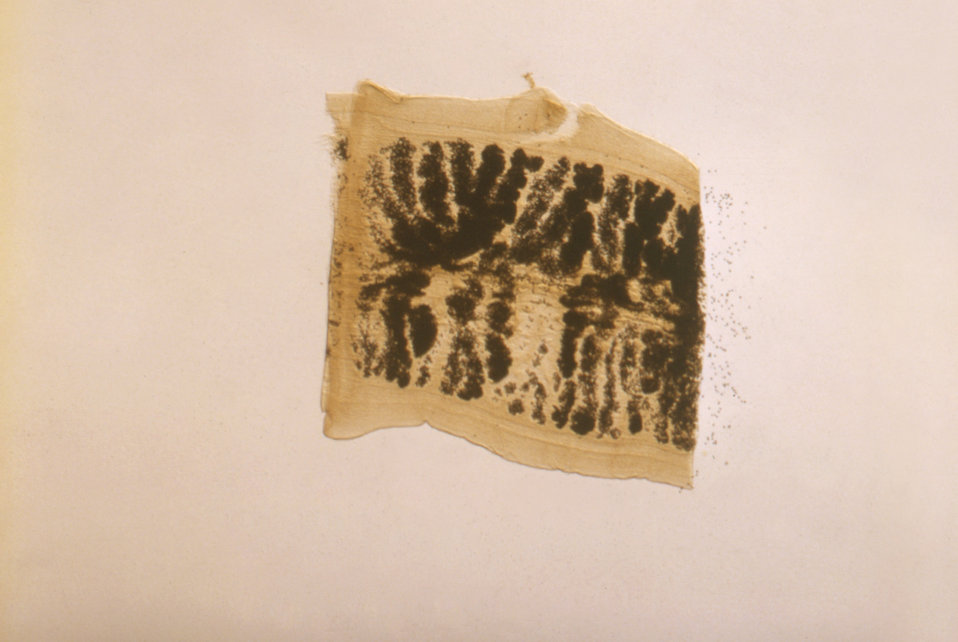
This image depicts a gravid proglottid, (the tapeworm segment containing eggs) from a Taenia solium tapeworm, or cestode.